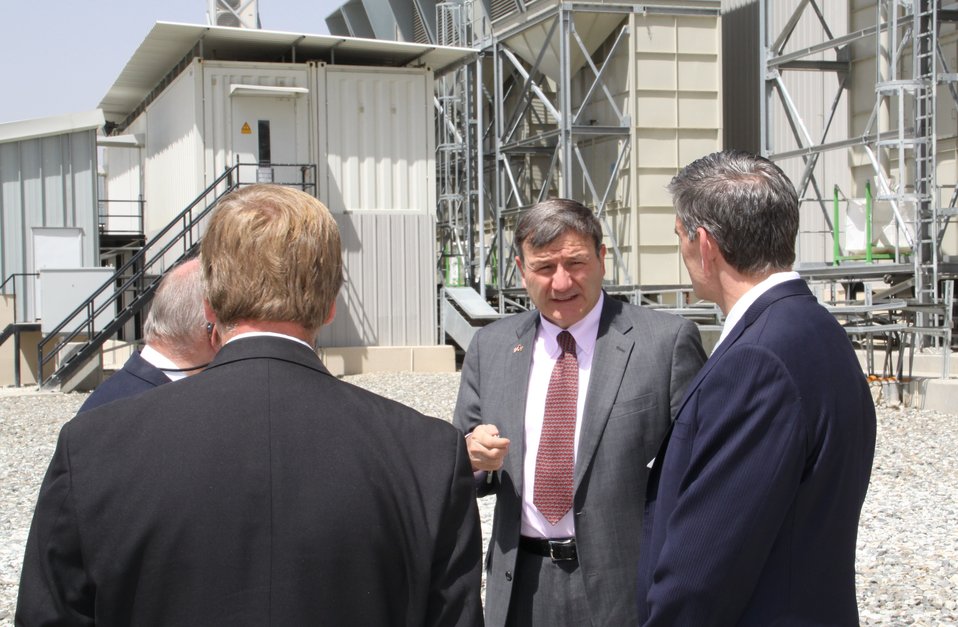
105 MW Tarakhil Power Plant Handover